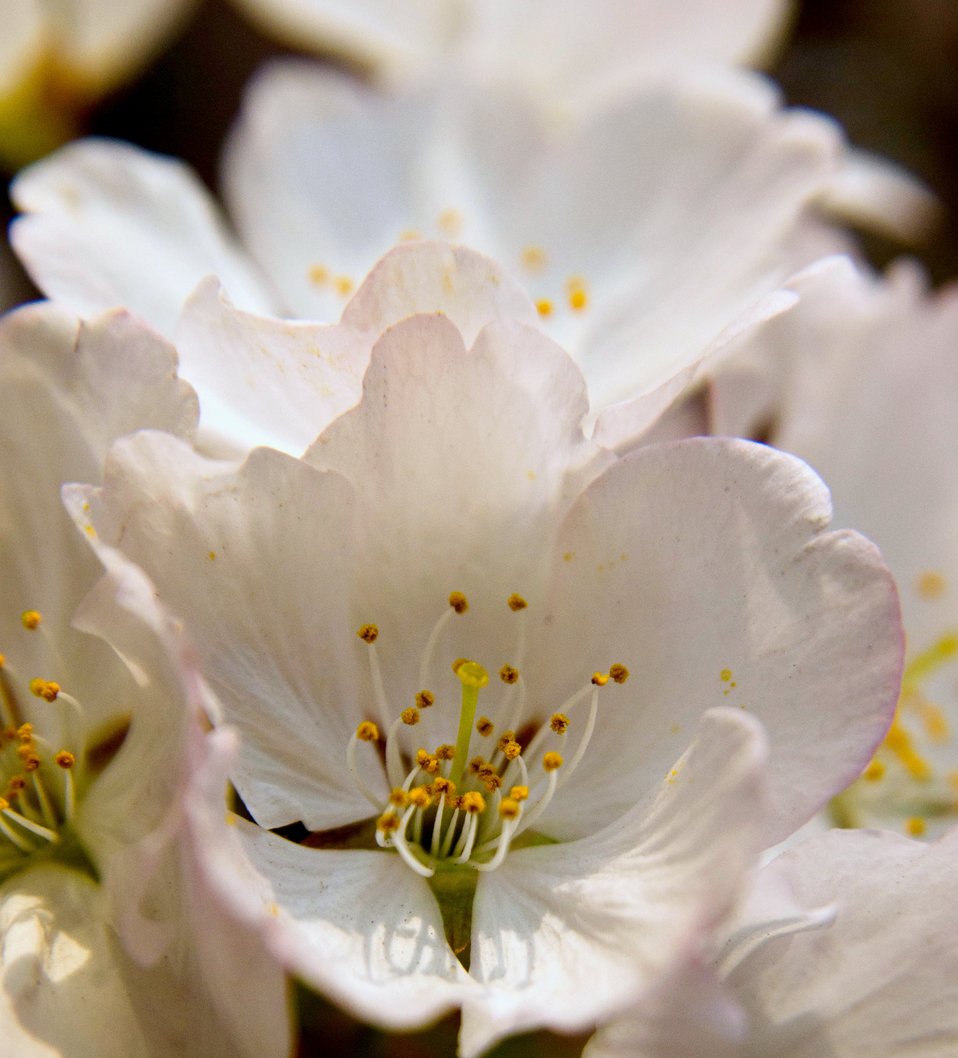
Cherry blossoms at the Tidal Basin in Washington, D.C., on Tuesday, March 20, 2012.